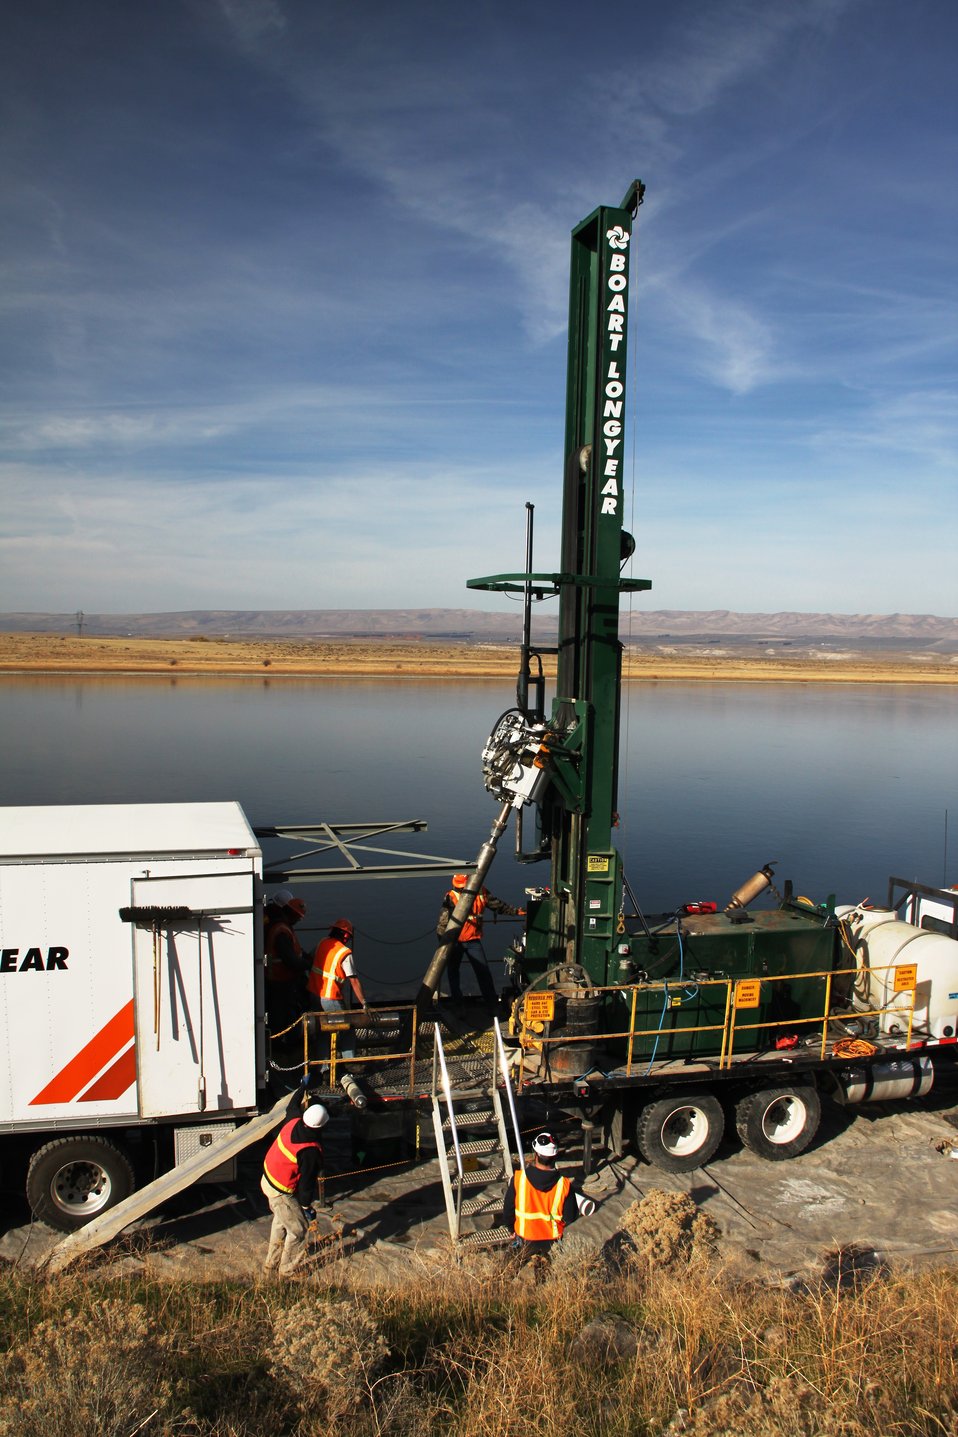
With $1.4 million in Recovery Act funding, CH2M HILL drilled 171 wells along the shoreline of the Columbia River, which runs through the Site. The new wells will help extend a chemical groundwater barrier in the soil by half a mile along the river to contain radioactive contamination in the groundwater (strontium-90).